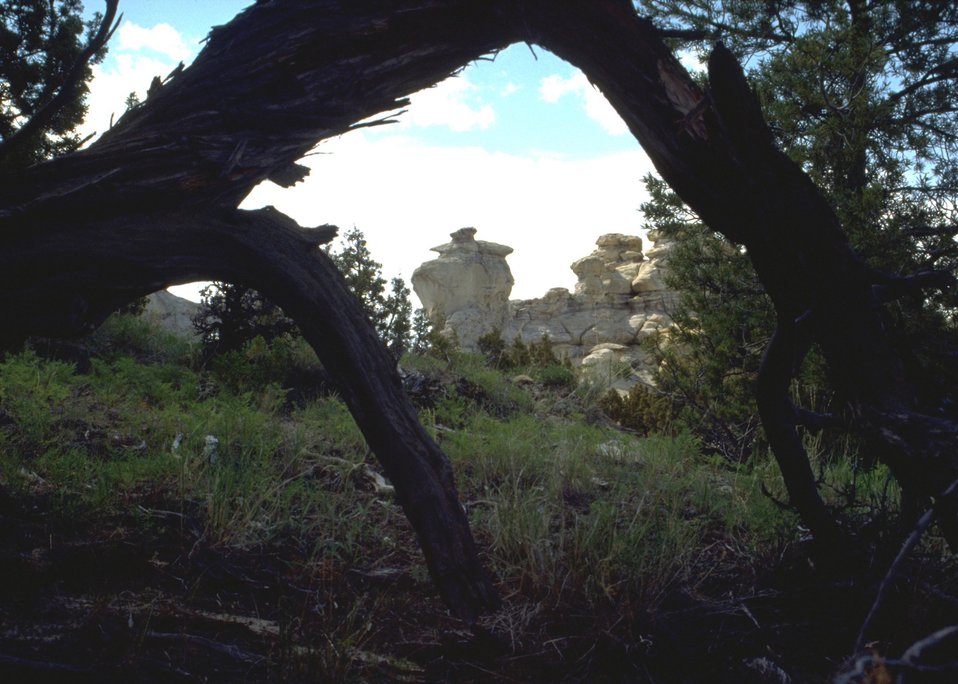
Scenic rock site.